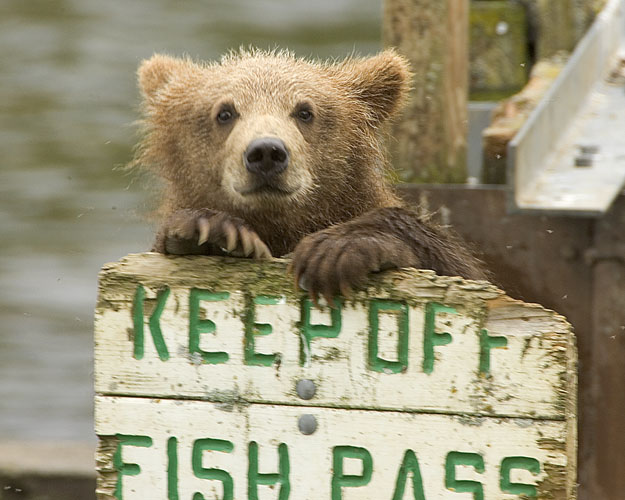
Kodiak Brown Bear

Kodiak National Wildlife Refuge- Wildlife